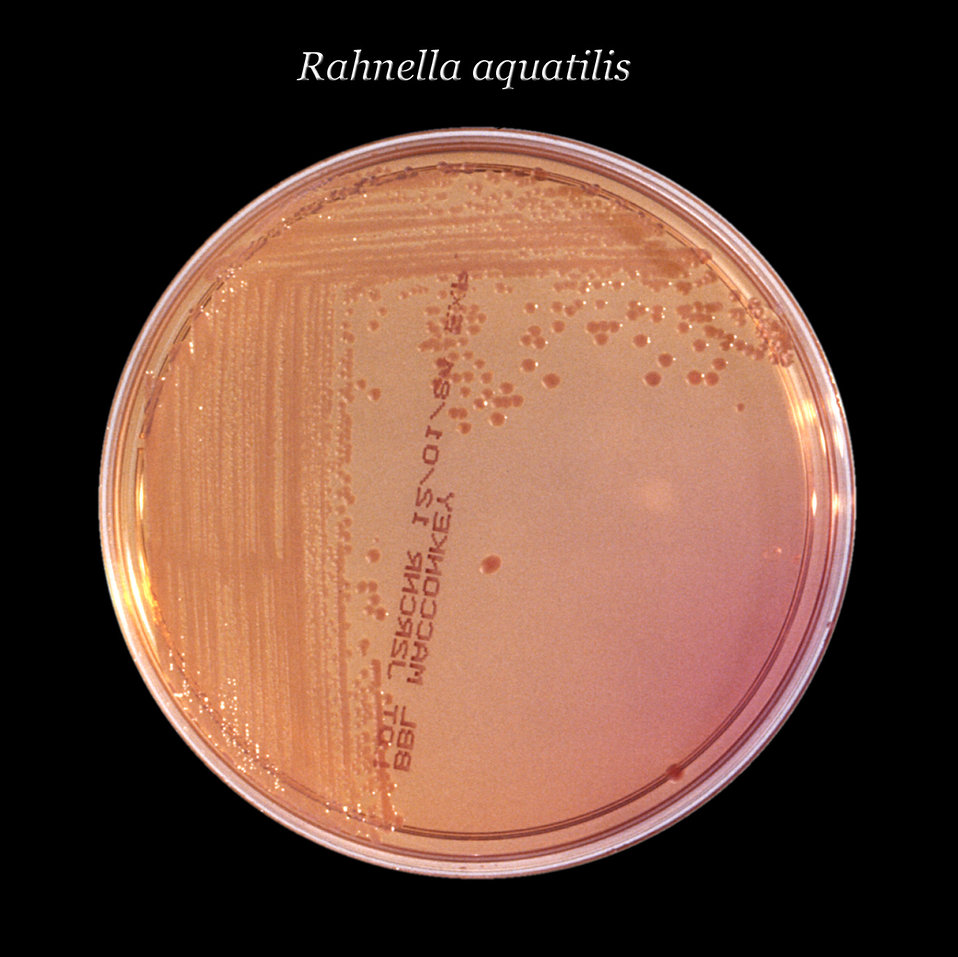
After 24 hours, this inoculated MacConkey agar culture plate cultivated colonial growth of Gram-negative, rod-shaped and facultatively anaerobic Rahnella aquatilis bacteria.